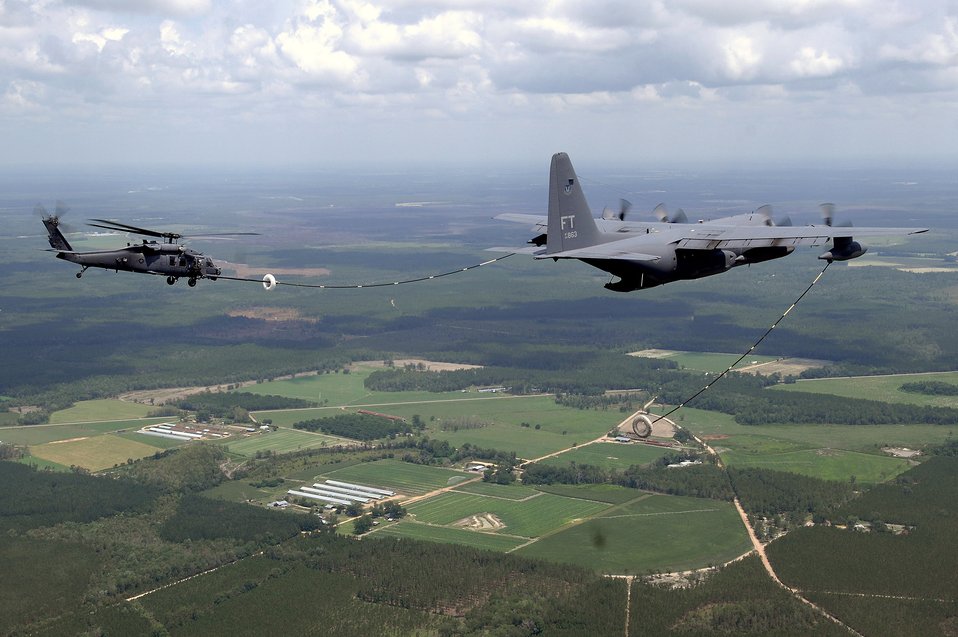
Doing something amazing

A HC-130P refuels an HH-60 Pave Hawk June 27 while being filmed by a video production team for the Air Force recruiting campaign,